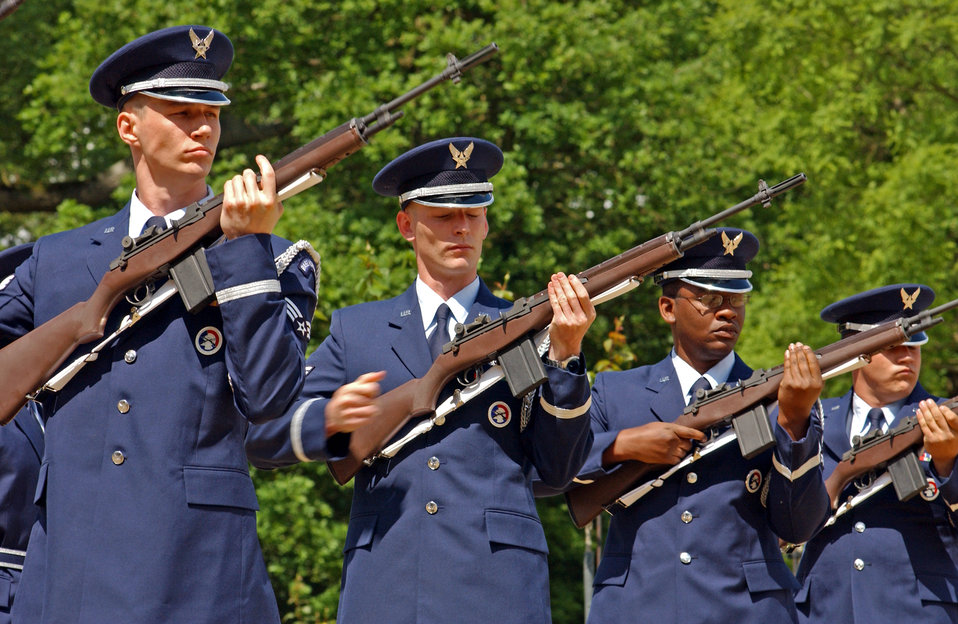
Rendering honors

CAMBRIDGE, England -- Airmen from the 48th Fighter Wing honor guard at Royal Air Force Lakenheath, England, prepare to fire a volley during a Memorial Day ceremony at the Cambridge American Military Cemetery here May 31.